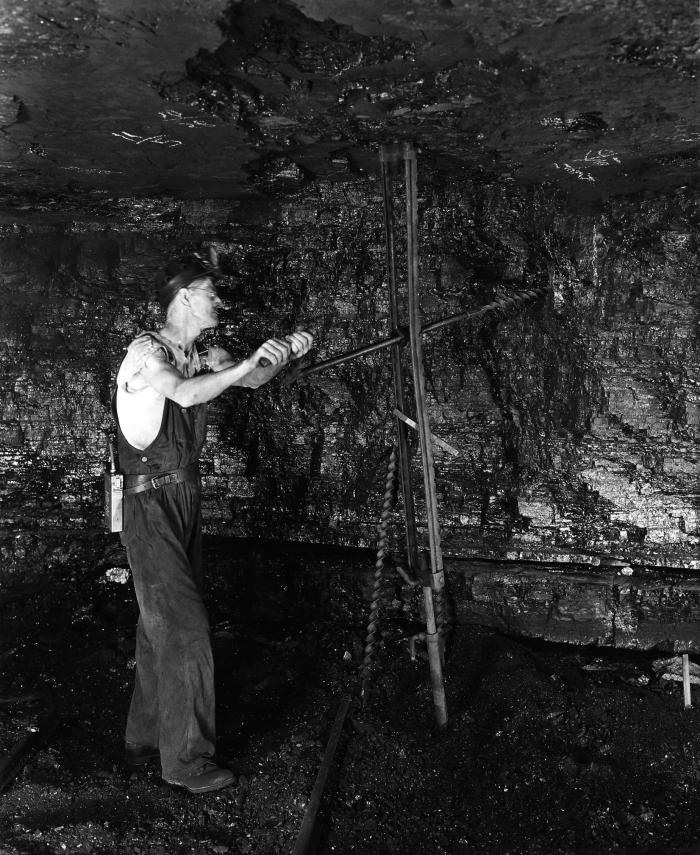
From the 1950s or 1960s, and provided by the Center for Disease Control's (CDC), National Institute for Occupational Safety and Health (NIOSH), this historic image depicted a coal miner using a hand-held auger against the wall of a mine shaft. Using a hand-held device allowed the miner to be more selective in the excavation process, as well as to extract small ore samples for analytical purposes. Note that this miner was not wearing any protective facial breathing gear such as a filtered mask. In the small confines of a mine, airborne coal dust can emanate from almost anywhere in the shaft network, which made miners predisposed to the long-term negative health effects of this profession such as 'black lung disease', or 'coal-workers' pneumoconiosis' (CWP).